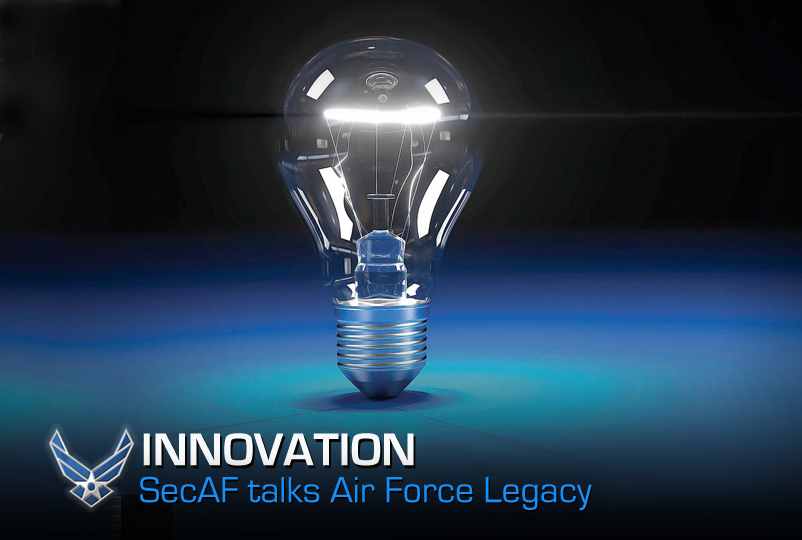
Innovation